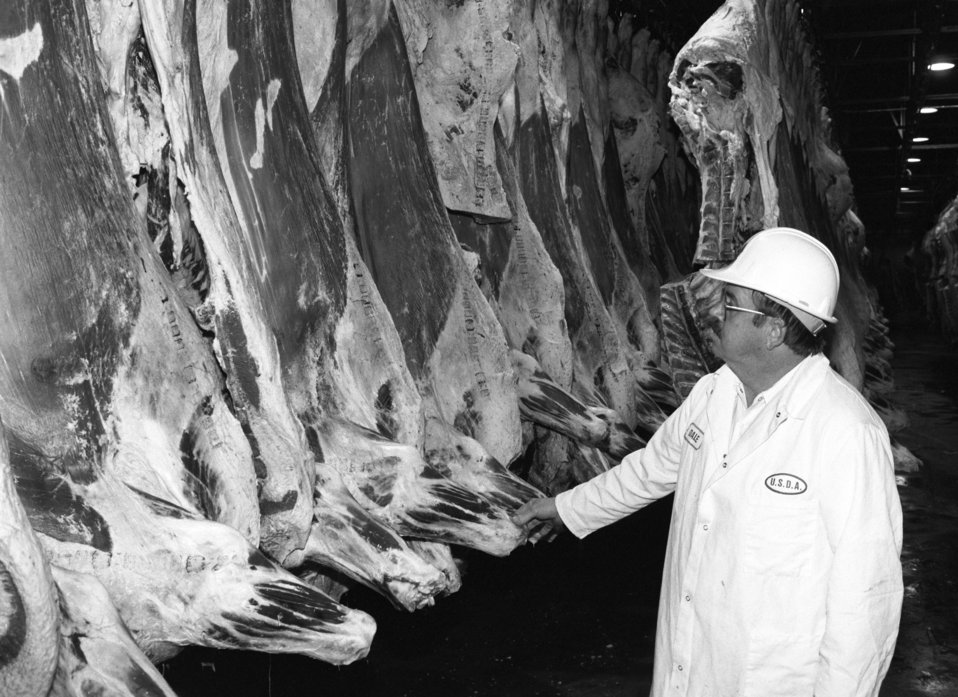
U.S. Department of Agriculture (USDA) Food Safety Inspection Service (FSIS) inspectors inspect beef using a Streamline Inspection System (SIS) at a processing plant in Plainview, TX on January 22, 1991.